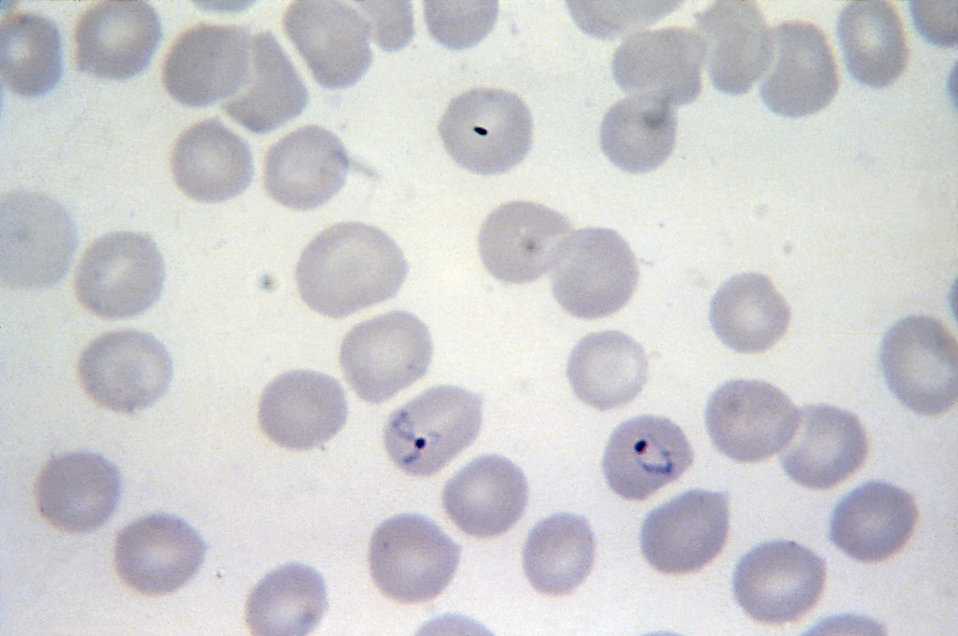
This thin film micrograph depicts a Plasmodium vivax ring form, and a growing ameboid trophozoite; Mag 1125X.